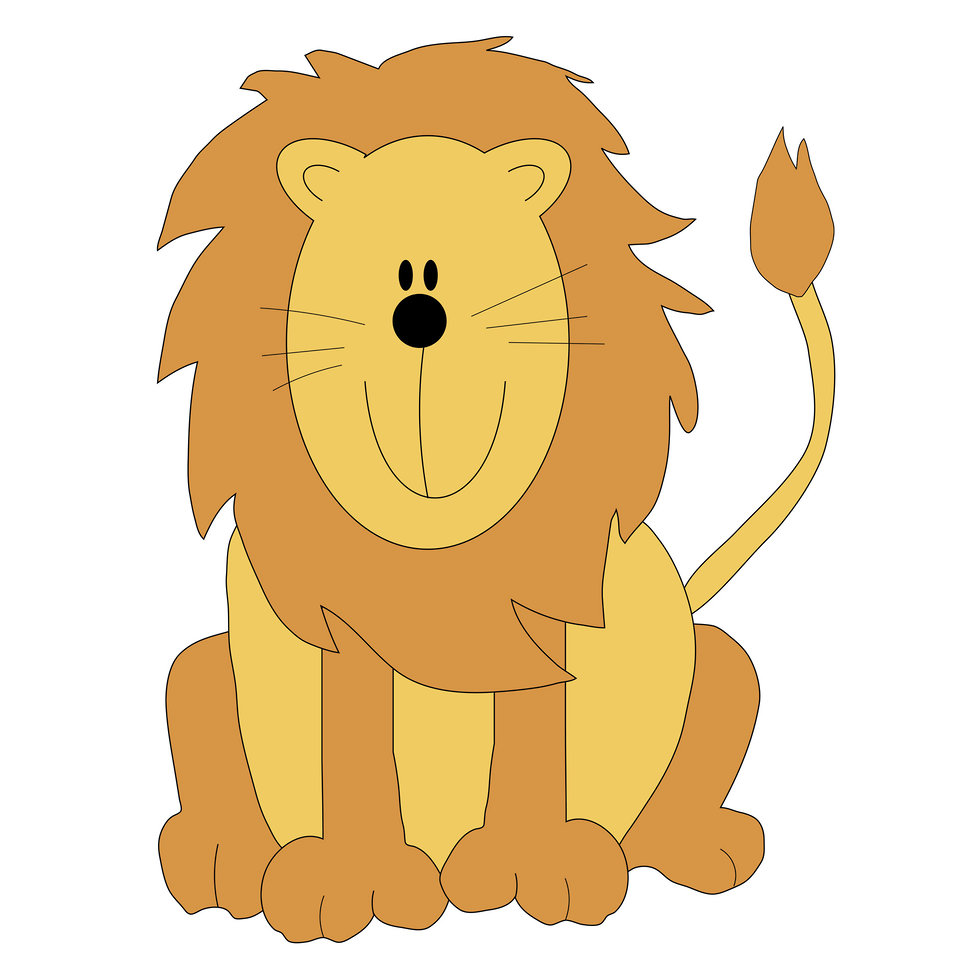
Lion

Cartoon lion clip-art.